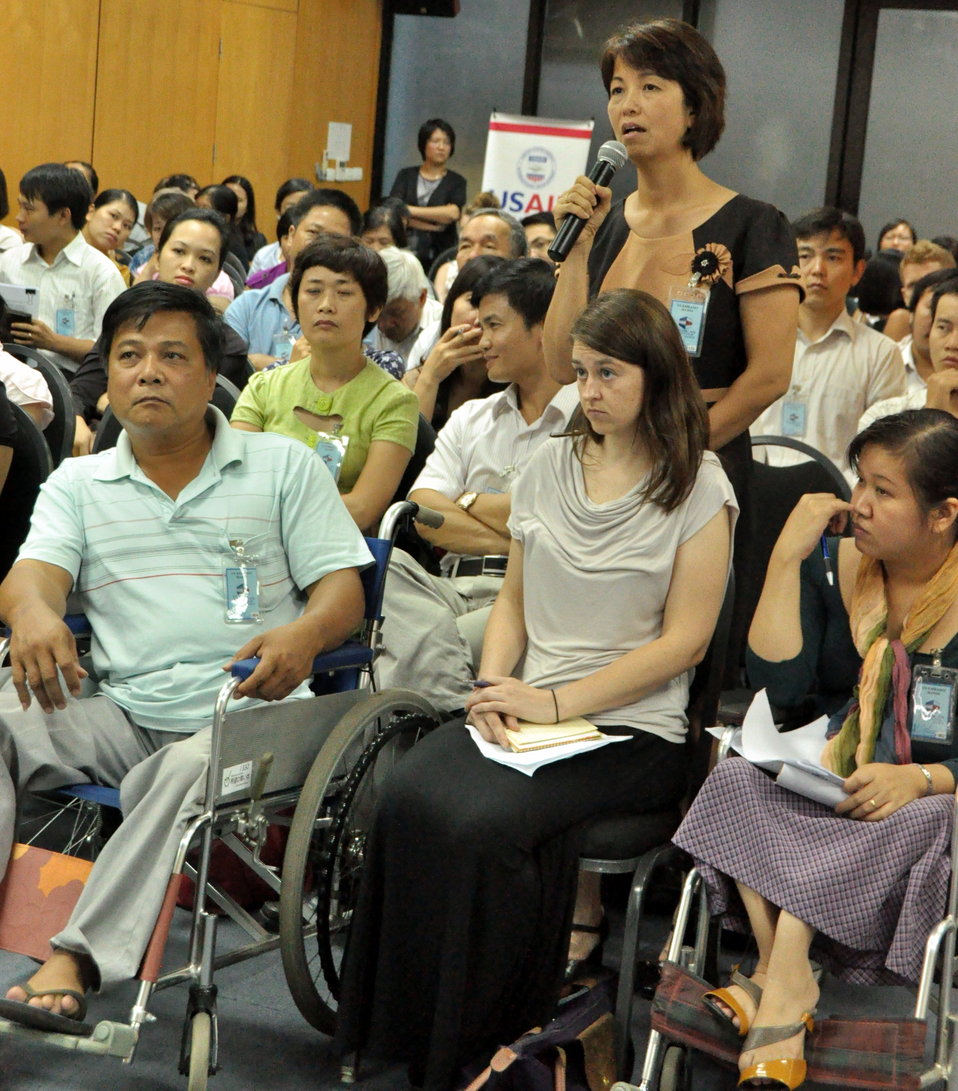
Development Grants Program Workshop in Hanoi

July 24, 2013